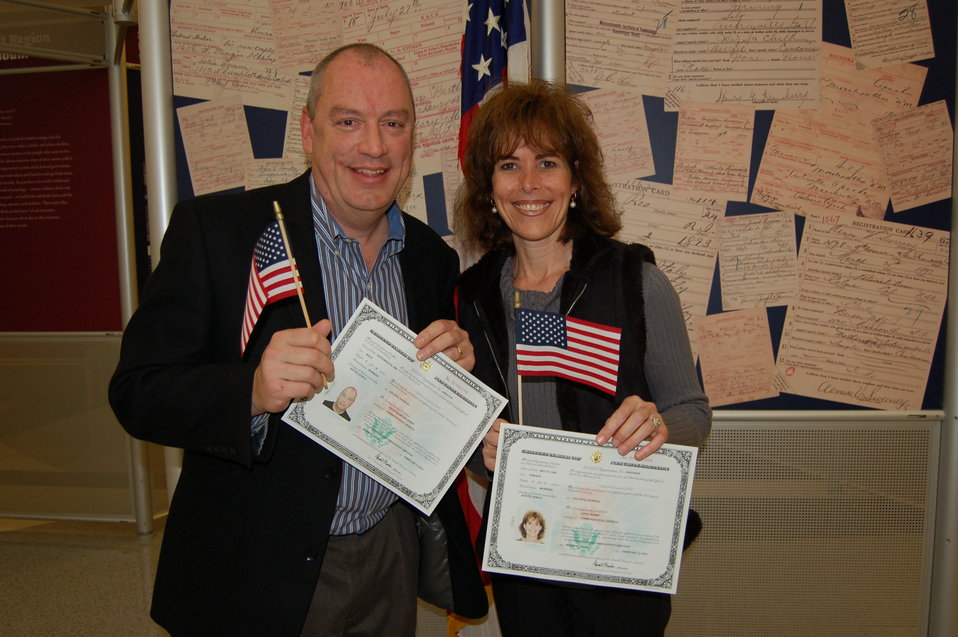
New Citizens